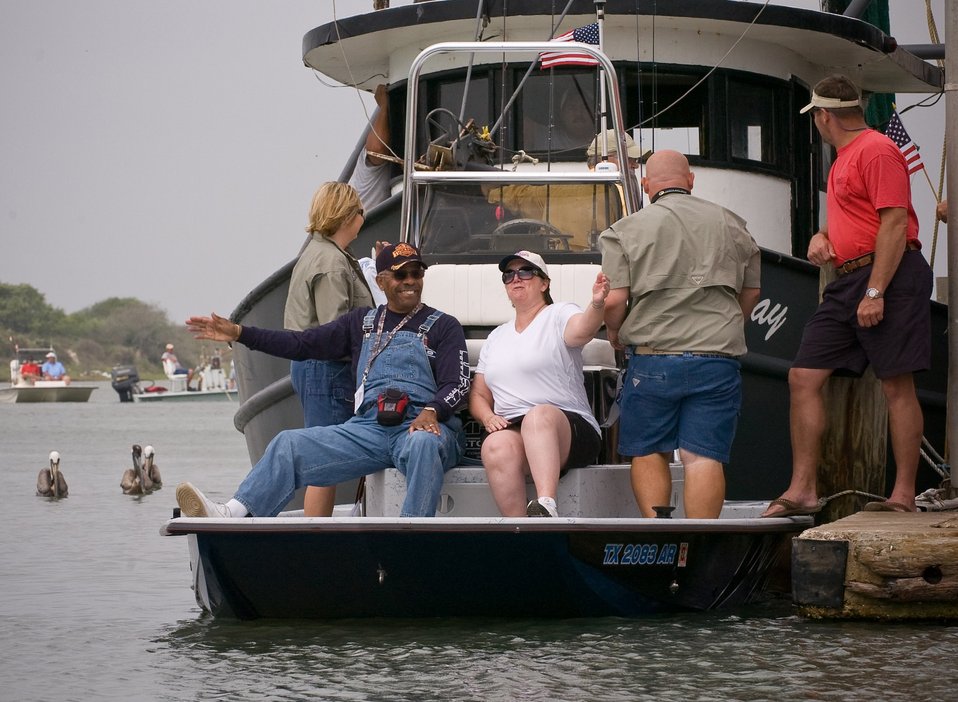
Wounded Warrior

Donald